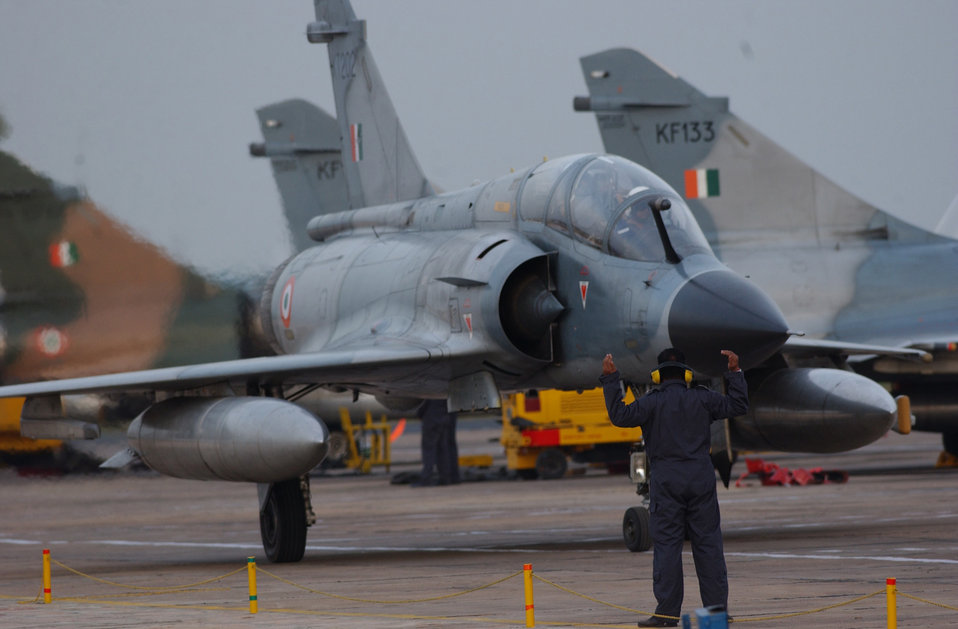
Cope India '04

GWALIOR AIR FORCE STATION, India -- An Indian air force M-2000 Mirage taxis into position following a Cope India '04 sortie here Feb.18. About 150 U.S. airmen are here supporting the first bilateral fighter exercise between the two air forces in more than 40 years.